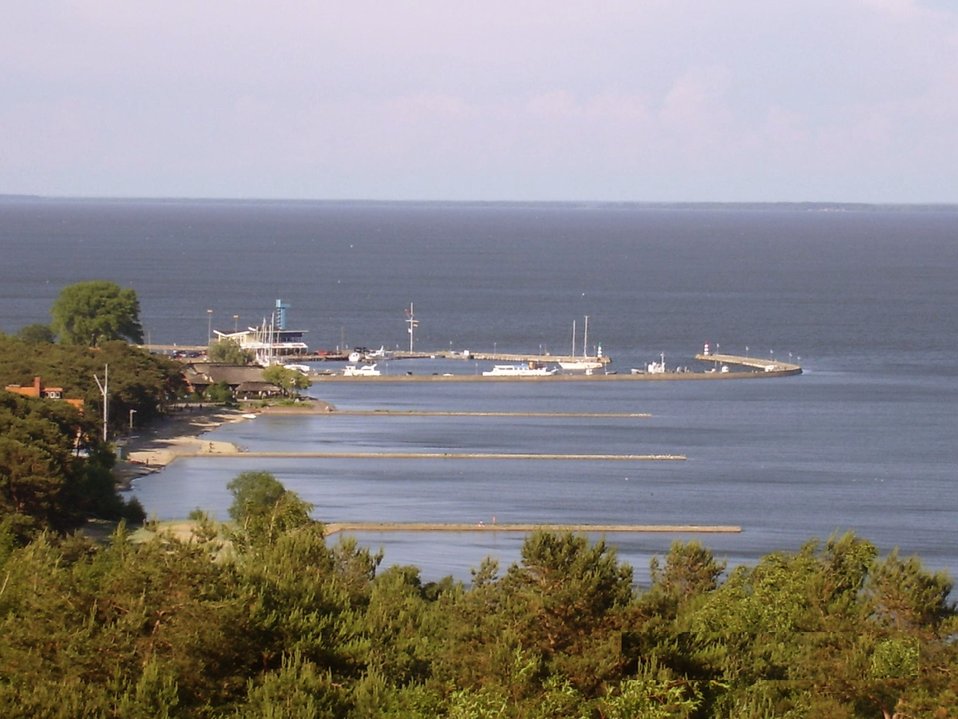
Lietuvių: Autorius Mykolas Zovė. Nida. 2005m.